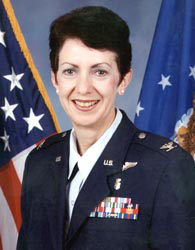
Colonel Regina Aune

1970's -- While a lieutenant in the spring of 1975, flight nurse Regina Aune became the first and only woman to receive the Cheney Award, recognizing an act of valor